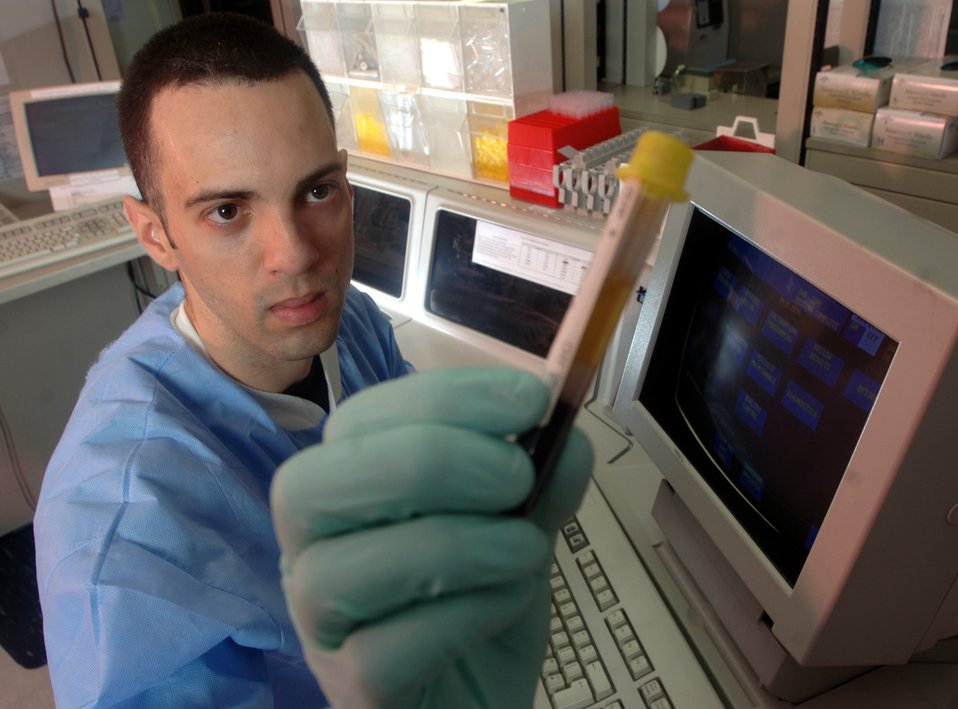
Medical lab techs

Senior Airman Eduardo Garcia-Perez prepares to run a test on a specimen at Yokota Air Base, Japan, on Thursday, May 11, 2006. Airman Garcia-Perez is a medical laboratory technician with the 374th Medical Group. His laboratory performs more than 48,000 tests annually.